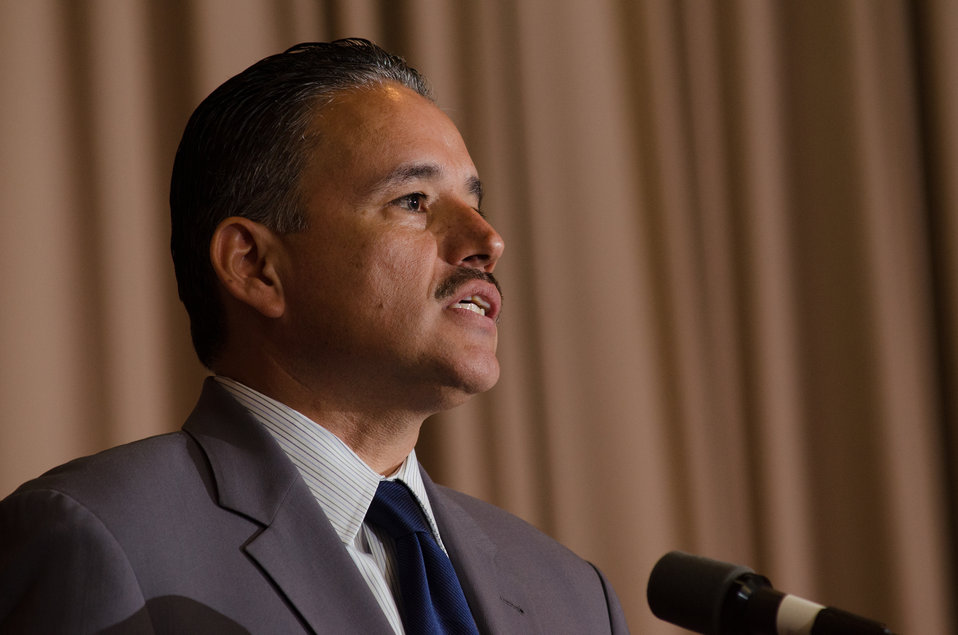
U.S. Department of Agriculture (USDA) Office of the Secretary, Deputy Chief of Staff Oscar Gonzales, Jr. made remarks on behalf of Secretary Thomas J. Vilsack, during the 2013 National Hispanic Heritage Month ”Hispanics: Serving and Leading our Nation with Pride and Honor,” on Thursday, Sept. 19, 2013, in the Jefferson Auditorium, USDA Headquarters, Washington, D.C.